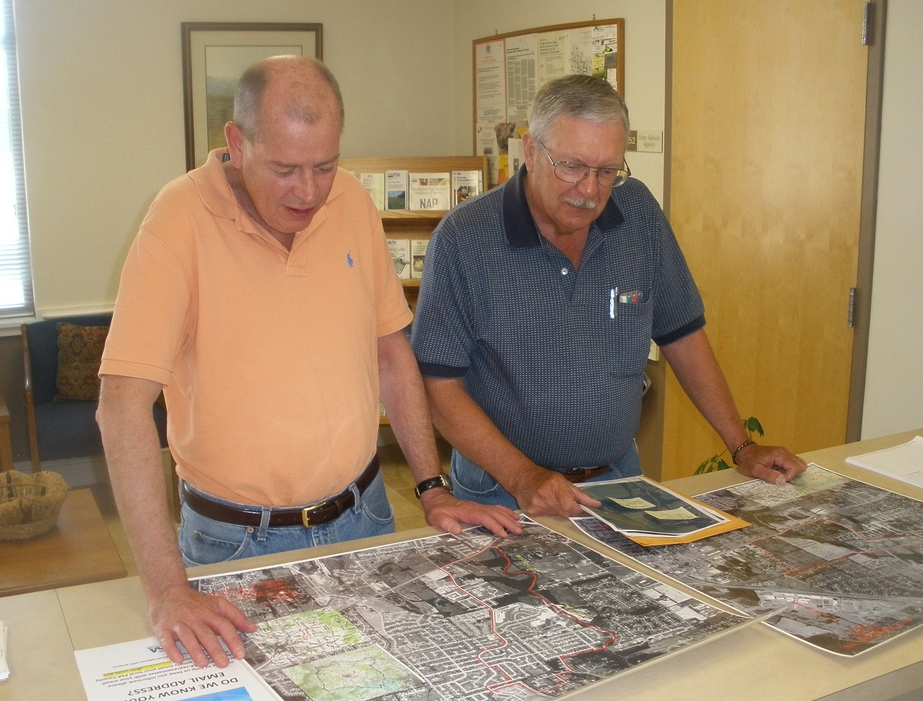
Midyear Surveys

National Association of State Departments of Agriculture (NASDA), U.S. Department of Agriculture (USDA) National Agricultural Statistics Service (NASS) Program Director Charlie Ingram and Supervisor Al Midgett prepare for the June Area Survey in Tennessee on June 6, 2012. NASS reaches out to more than 100 thousand farmers and ranchers across the country to conduct three major surveys: June Area, Crops/Stocks and Hogs and Pigs Inventory surveys.